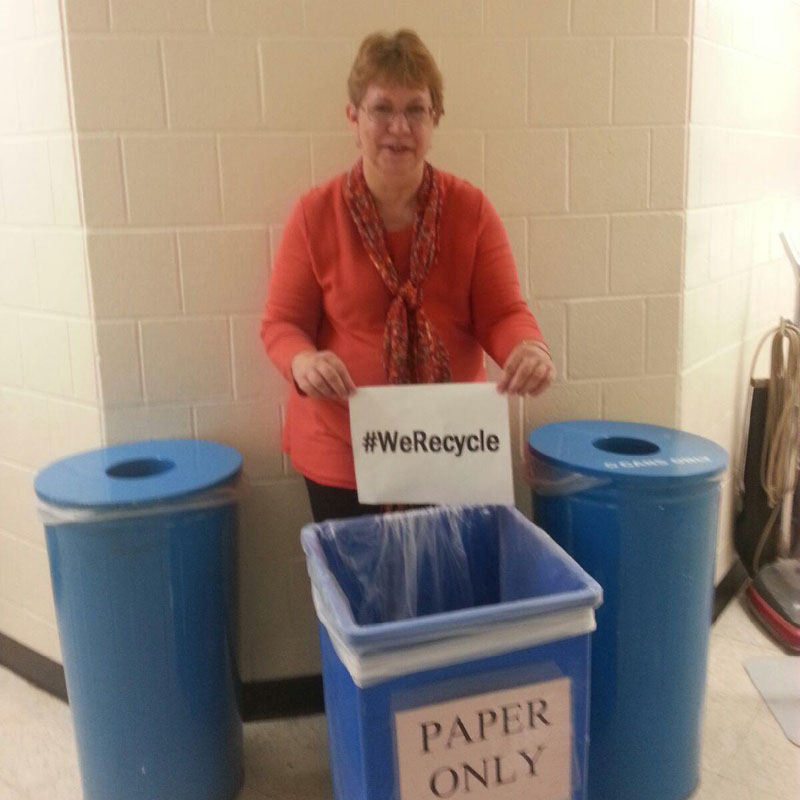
EPA Employee Debbie Recycles

At EPA, #WeRecycle. Learn how you can too: www2.epa.gov/recycle